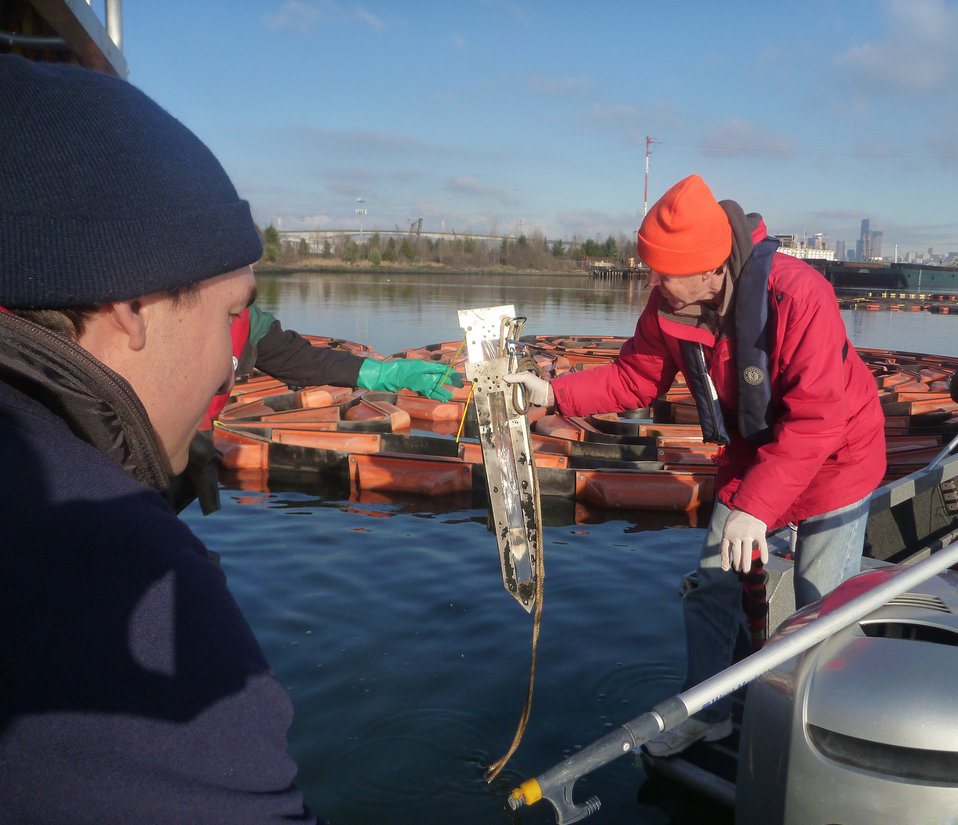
January 15, 2013 - Dive team collects passive sampler, Lower Duwamish River, WA

In November of 2012, EPA dive teams installed devices known as passive samplers, in the bottom sediment of the Lower Duwamish River.

To see the conditions underwater at the time of their deployment, check out this album on our EPA Divers Facebook page

These next few photos show the retrieval effort that took place in early January of 2013.

A century of heavy industrial use has left the Duwamish waterway contaminated with toxic chemicals from many sources – industries along its banks, stormwater pipes, and runoff from upland activities, streets and roads.

Data collected from these devices may help scientists study the alternatives to removing PCBs from the waterway.

Lower Duwamish Waterway Superfund Site

More about this sampling event